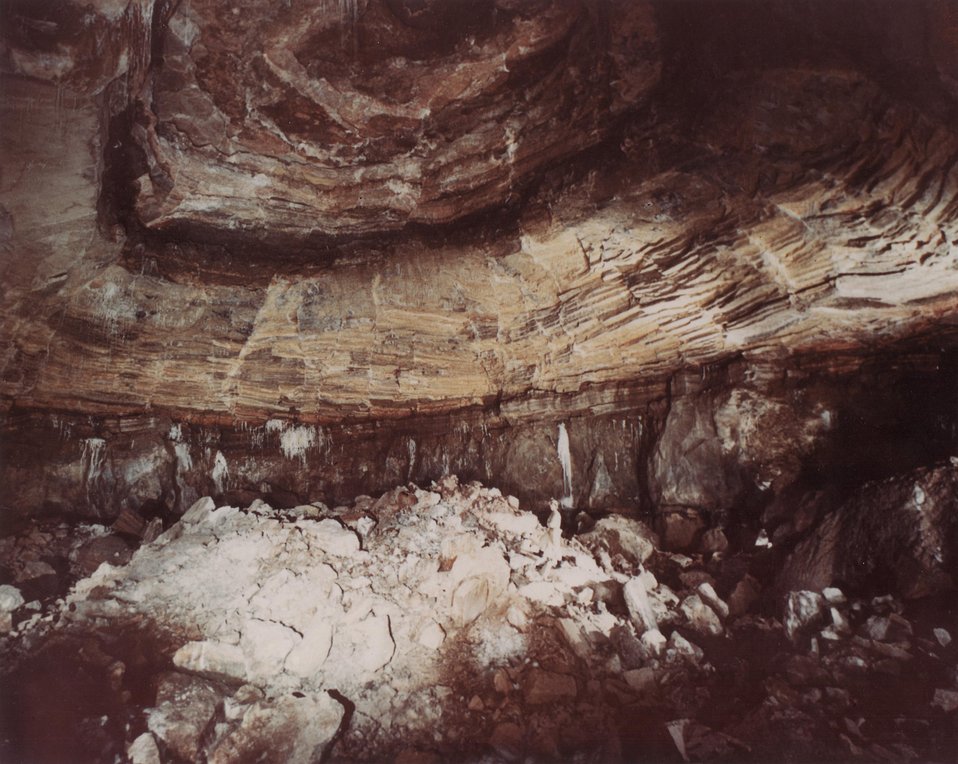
This is view toward the top of the cavity created by the GNOME shot. Note the stalactites. Circa 1962.